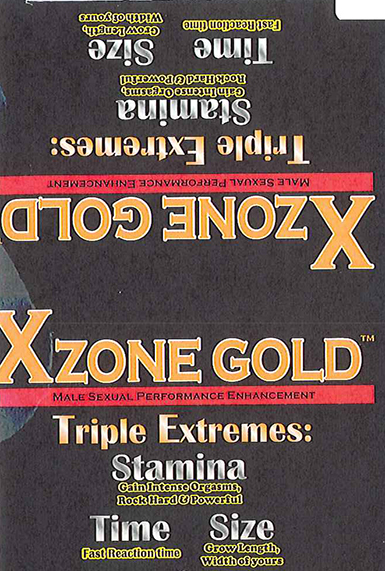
RECALLED – Dietary Supplement

April 1, 2014 – Product Recall – Nova Products, Inc. Issues Voluntary Nationwide Recall of Dietary Supplements with Undeclared Active Pharmaceutical Ingredients.